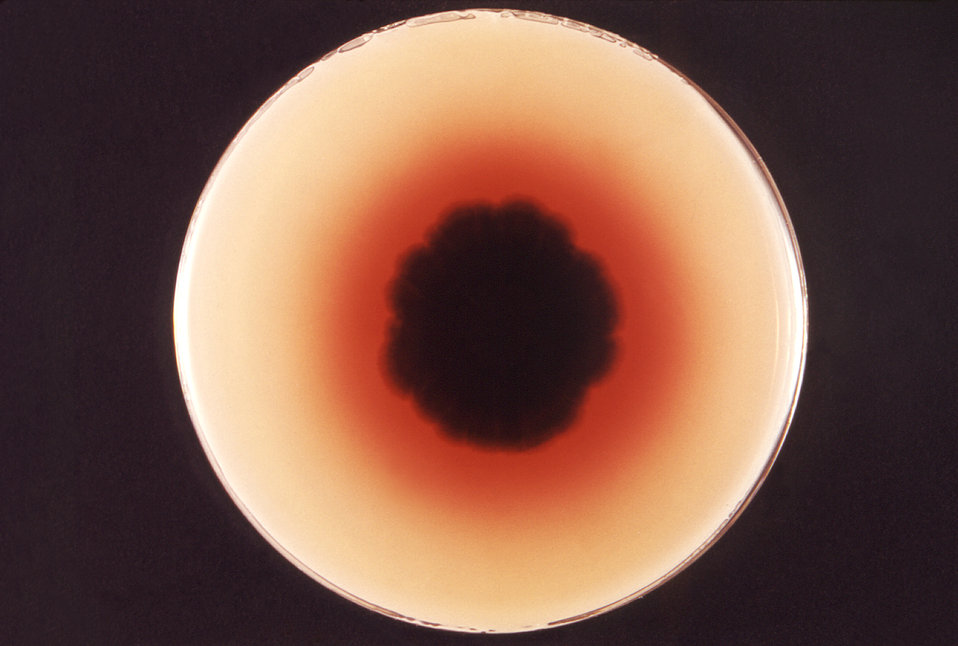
This 1971 photograph depicts the reverse (bottom) view of a Petri dish in which was growing a Penicillium marneffei fungal colony. Note the darkened interior pigment that lightens to a red-orange, then to a cream coloration, as the colony radiates outward from the center.